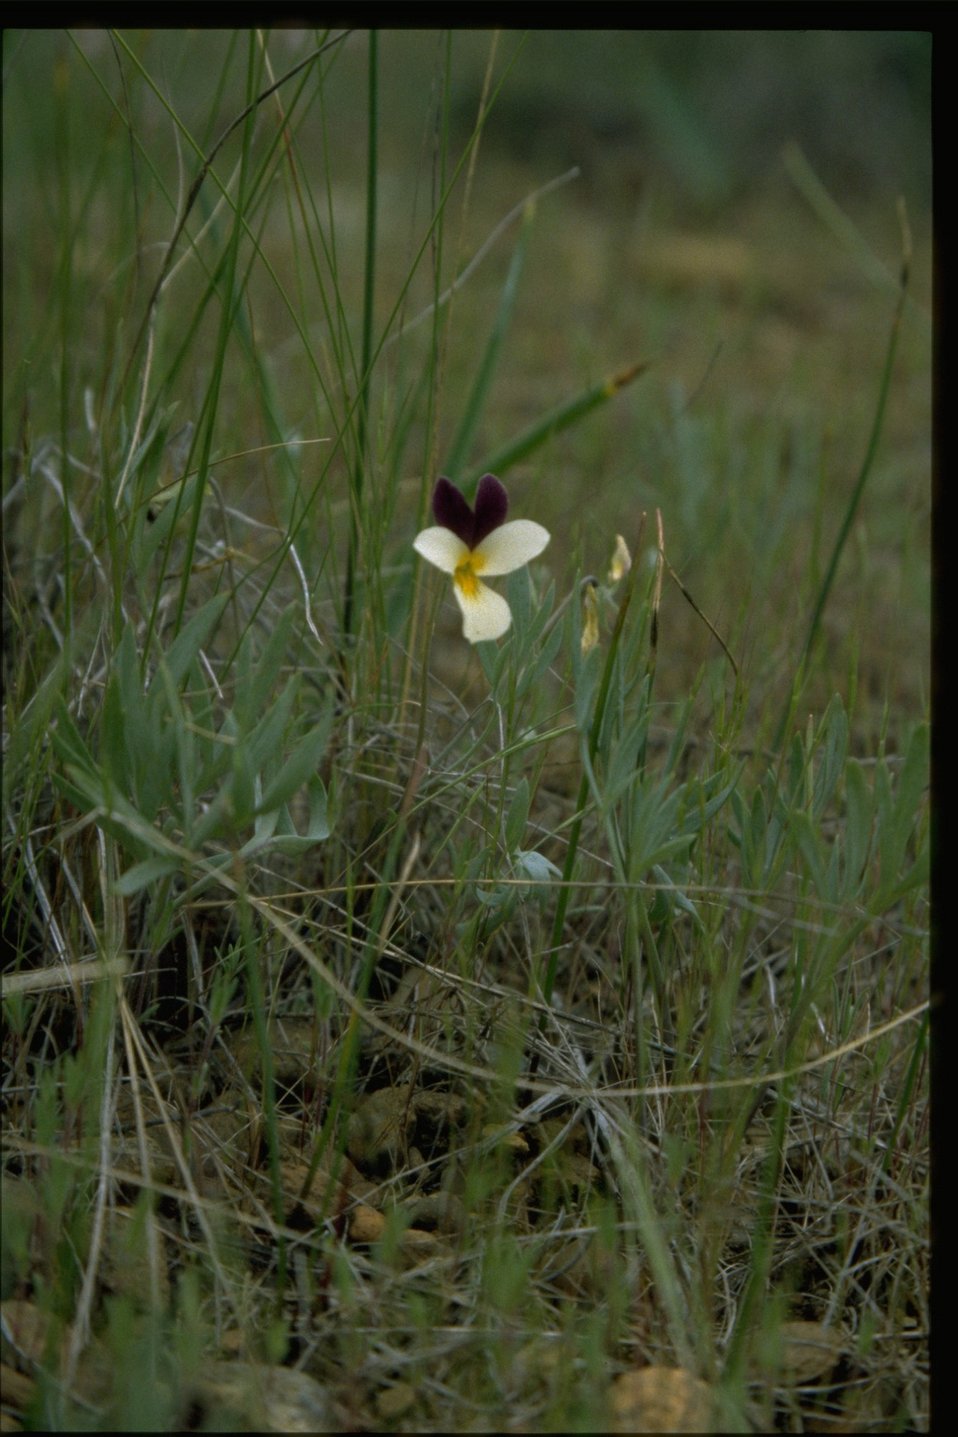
Medium shot of Viola hallii.